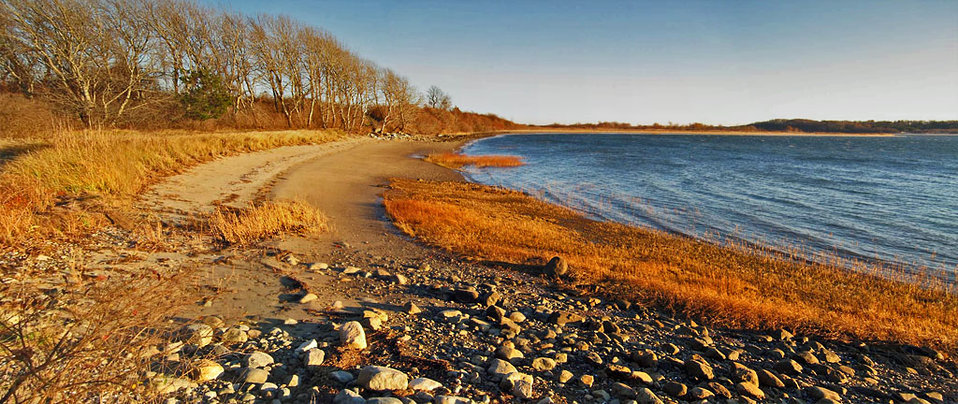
Stage Isle

Parker River National Wildlife Refuge, MA.